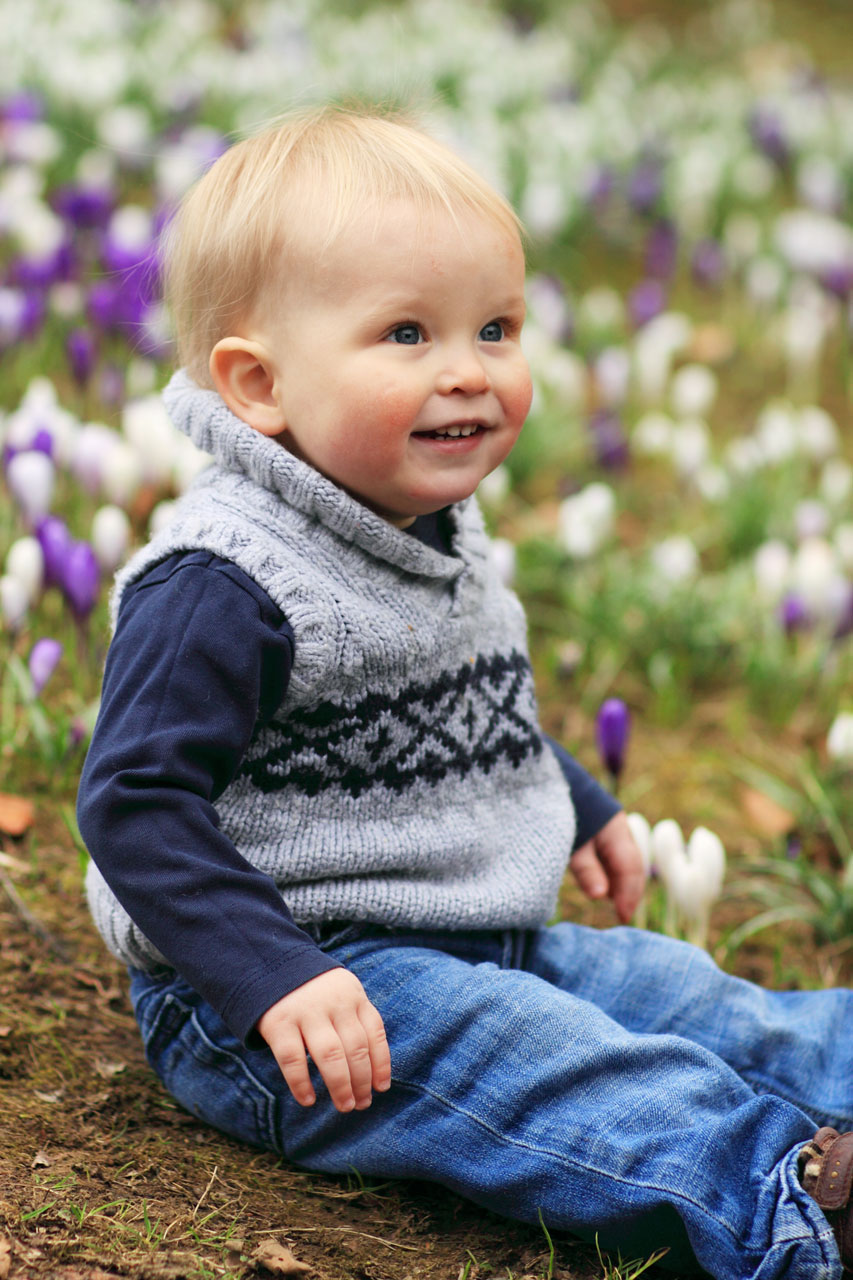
Little boy sitting on grass in park.